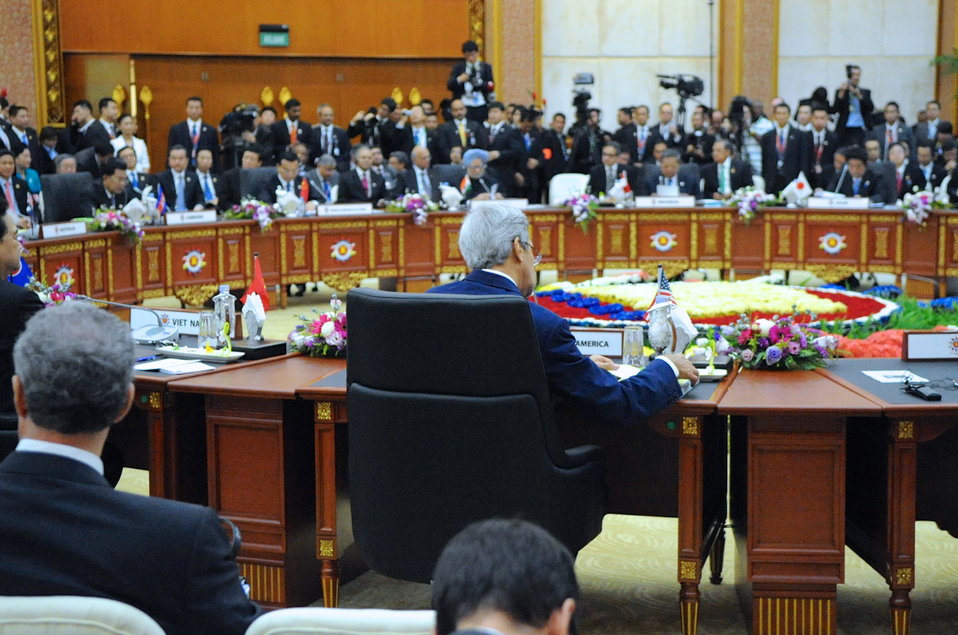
Secretary Kerry Participates in East Asia Summit

U.S. Secretary of State John Kerry prepares for the start of the East Asia Summit in Bandar Seri Begawan, Brunei, on October 10, 2013.